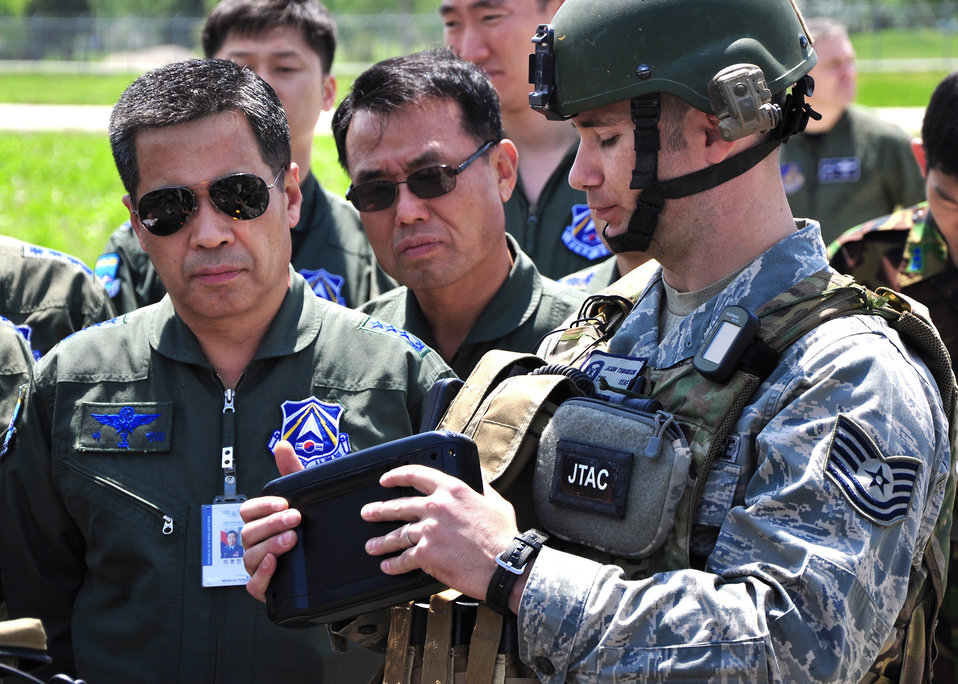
JTACs show off new capability during digital demo

Joint terminal attack controllers showcase new digital capabilities during a recent demonstration with South Korea airmen at Osan Air Base, South Korea. The JTACS are assigned to the 607th Air Support Operations Group.